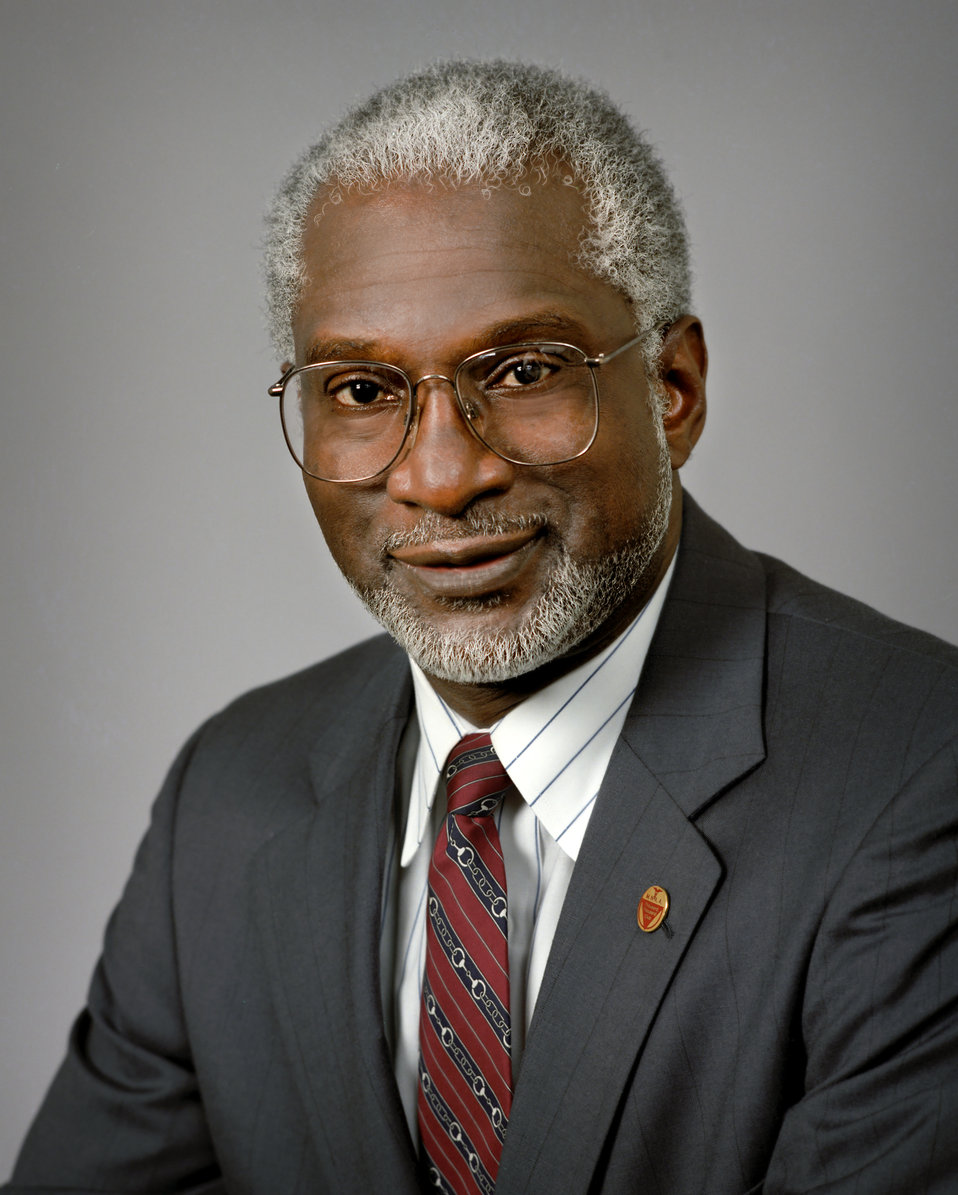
Photographer Troy Hall captured this image of Dr. Satcher while he was the Director of the Center of Disease Control, 1993-1998.